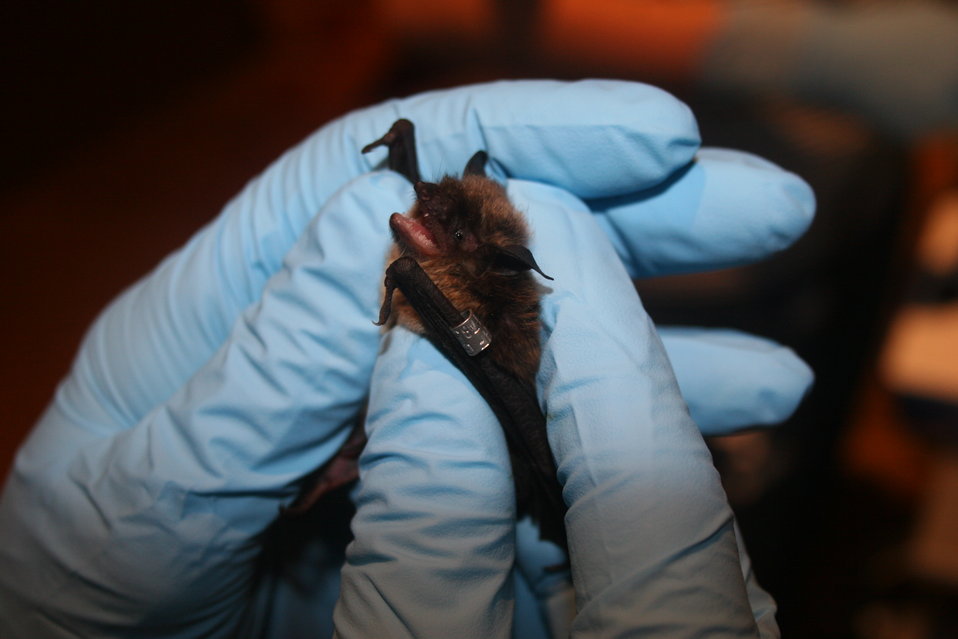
Little brown bat with wing band. The band will help biologists and researchers identify individual bats from year to year.